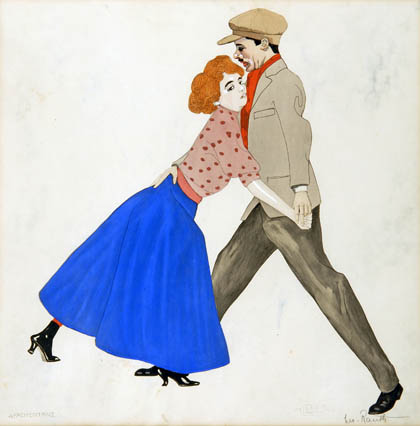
Apachentanz, 1911, Lichtdruck, koloriert auf wolkenmarmoriertem Karton – Apachentanz = Kein Indianertanz, sondern ein Varietétanz, der um 1900 in Paris entstand und das Verhältnis zwischen einer Dirne und eines Zuhälters akrobatisch und pantomimisch darstellt